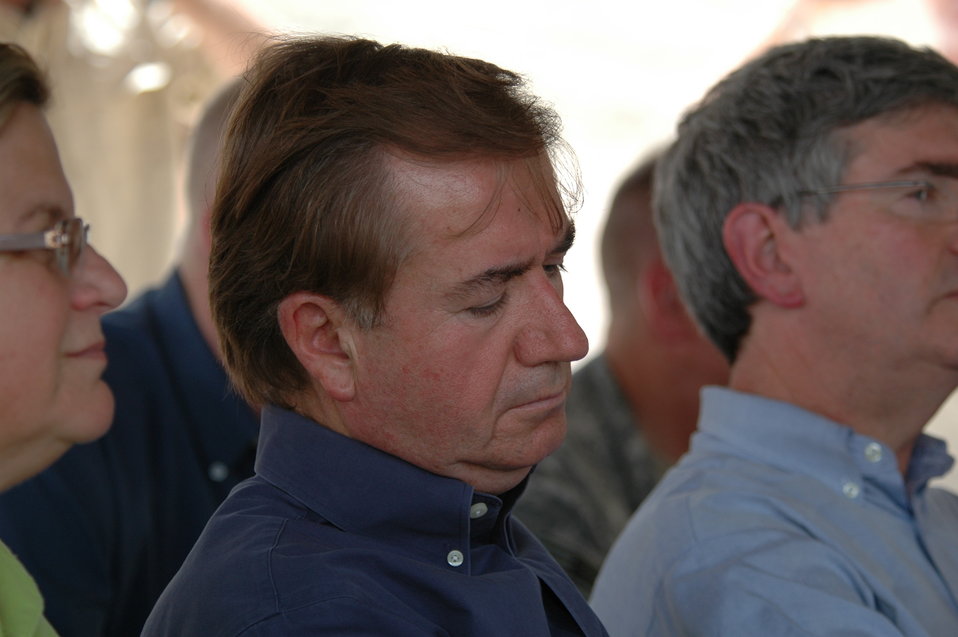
CODEL Berman